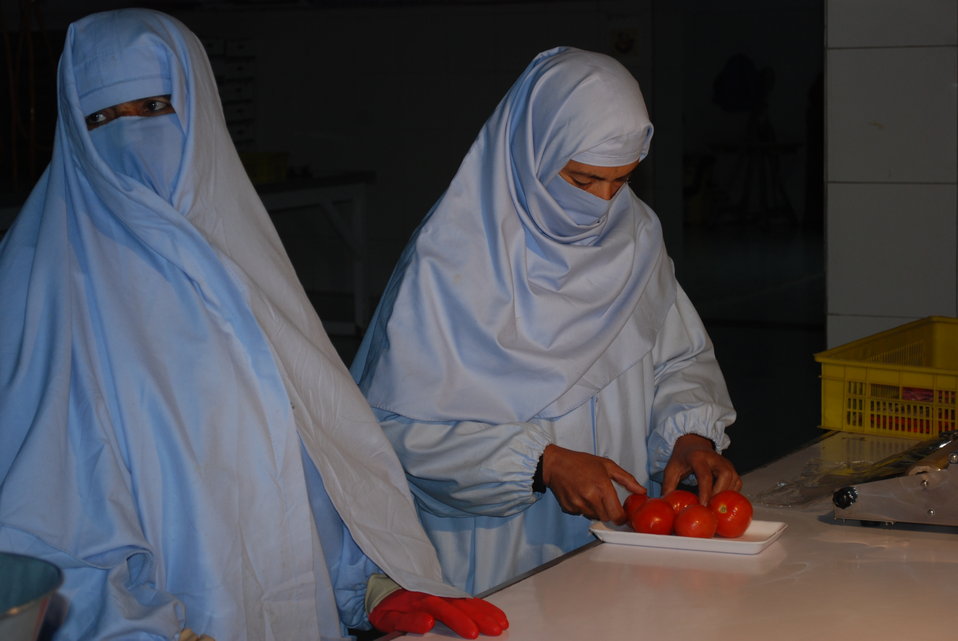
'On the Road' in Nangarhar Province